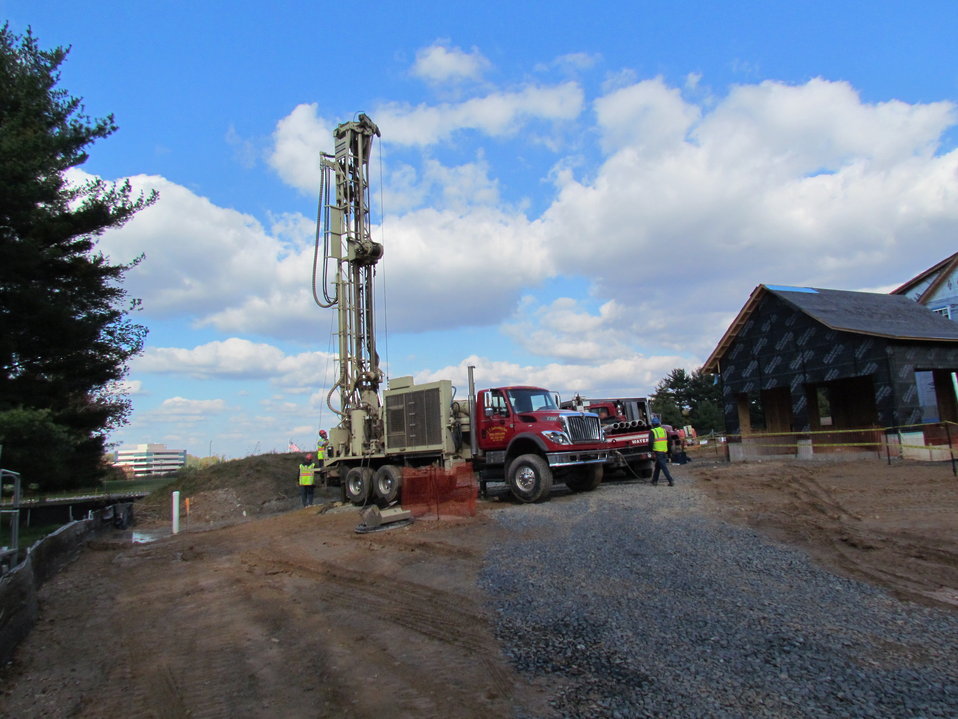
Net-Zero Energy Residential Test Facility - Drilling of three vertical wells for the second of three geothermal systems that will be used for future research.